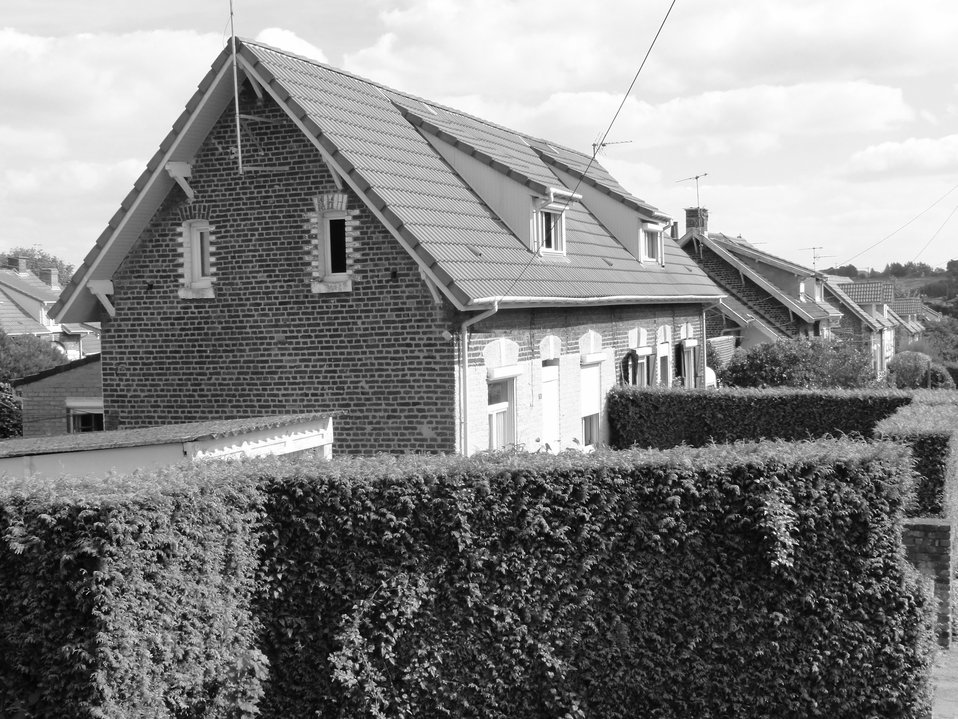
Fran√ßais†: Cit√©s de la Fosse n¬∞ 10 - 10 bis de la Compagnie des mines de B√©thune, Sains-en-Gohelle, Pas-de-Calais, Nord-Pas-de-Calais, France.